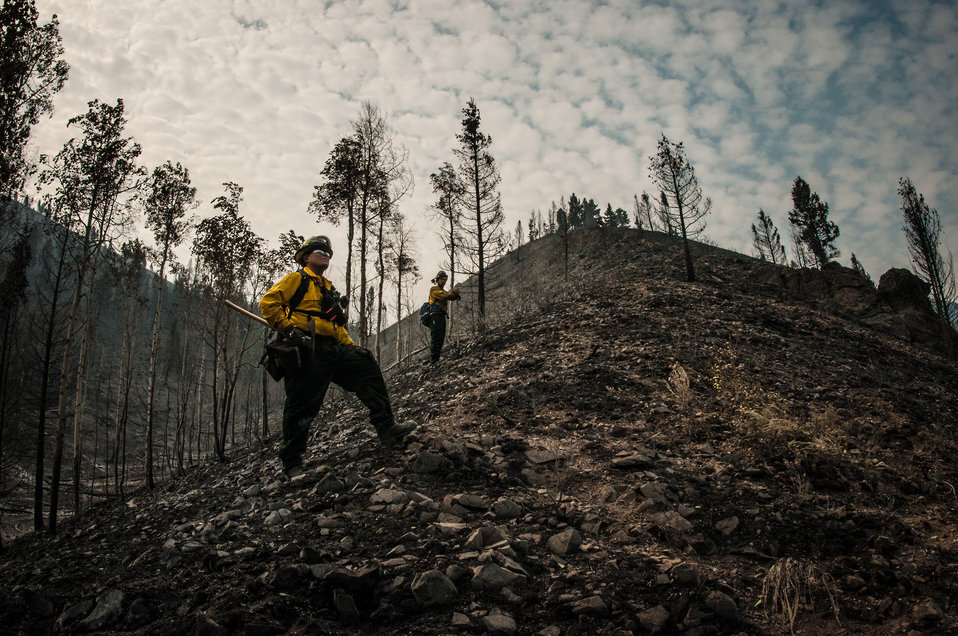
Department of the Interior, Indian Affairs (BIA) Southern Plains Initial Attack Type 2 Crew Ryan Blackstar, is a Sawyer B Faller, looking for hotspots of hot embers above or below the ground that may threaten homes at the bottom of this hill, during the Beaver Creek Fire, west of Hailey, ID, in the U.S. Department of Agriculture (USDA) Forest Service (FS) and Sawtooth National Forest and Bureau of Land Management (BLM) lands, on Wednesday, Aug 21, 2013. A sawyer is a person who runs the power saws to cut down trees. The B qualification means the person has demonstrated sufficient judgment, skill, and knowledge to be trained or certified in moderately complex chain saw operations. Certified Faller B individuals may work independently on project or fireline assignments up to their level of skill. They demonstrate the judgment to decline assignments that exceed their skill level.